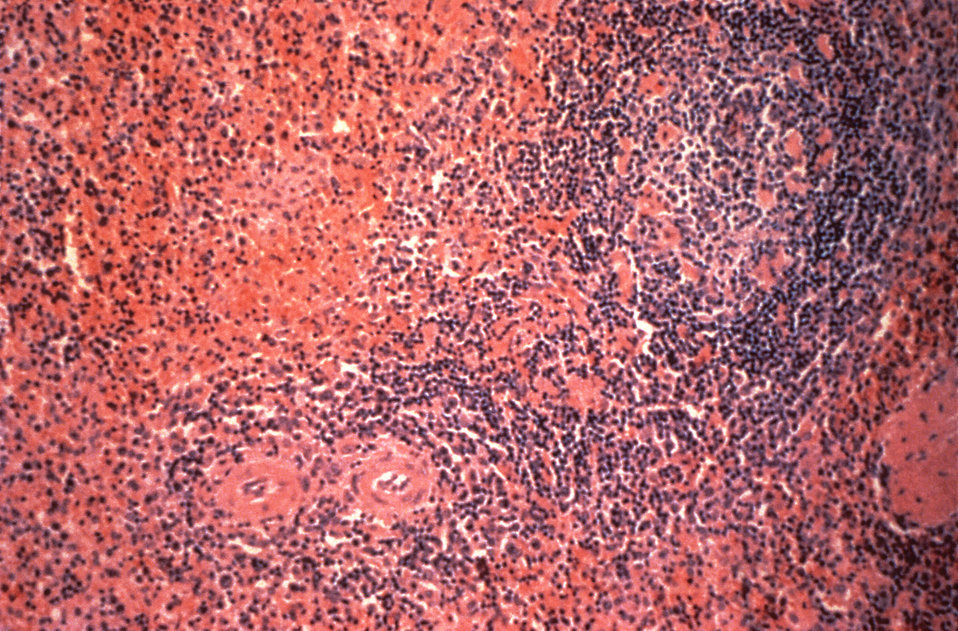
This is a micrographic study of splenic tissue from a Hantavirus pulmonary syndrome (HPS) patient.